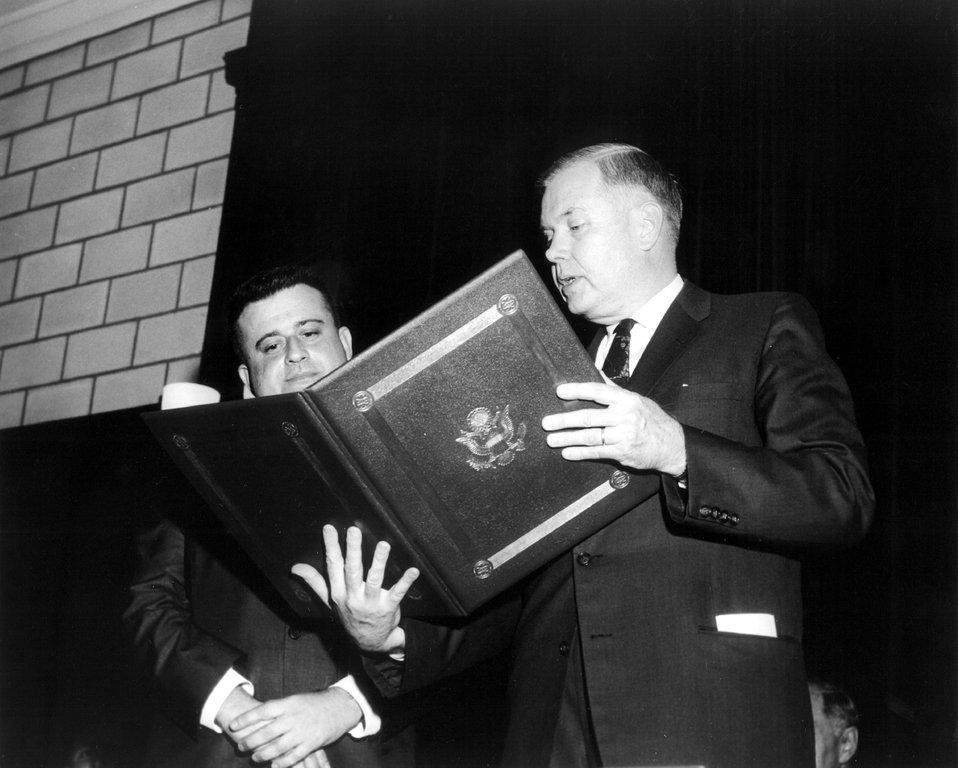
Lawrence Award, 1966.